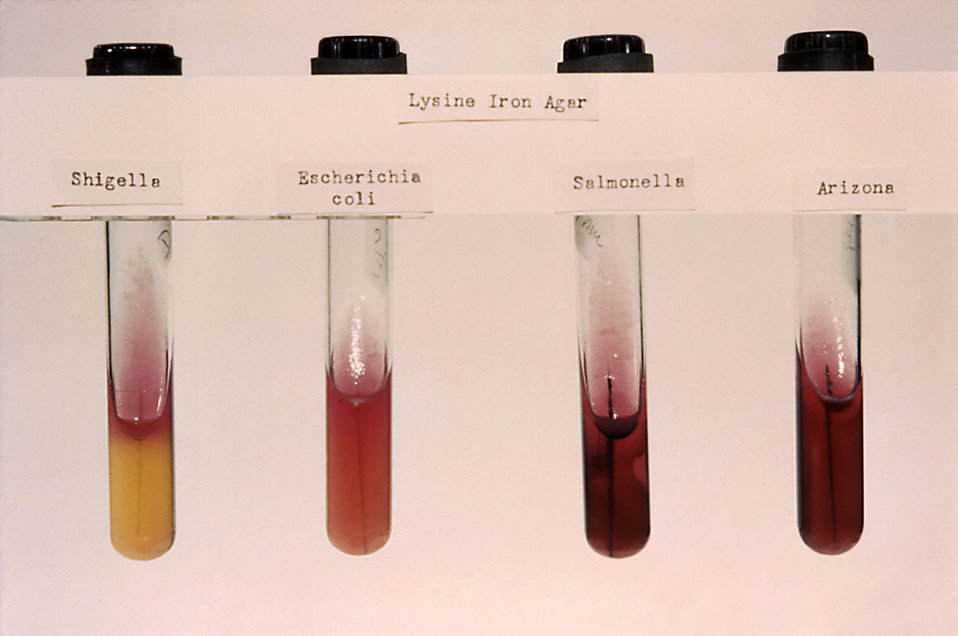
These were Arizona sp., E. coli, Salmonella sp. and Shigella sp. lysine iron agar stab cultures.